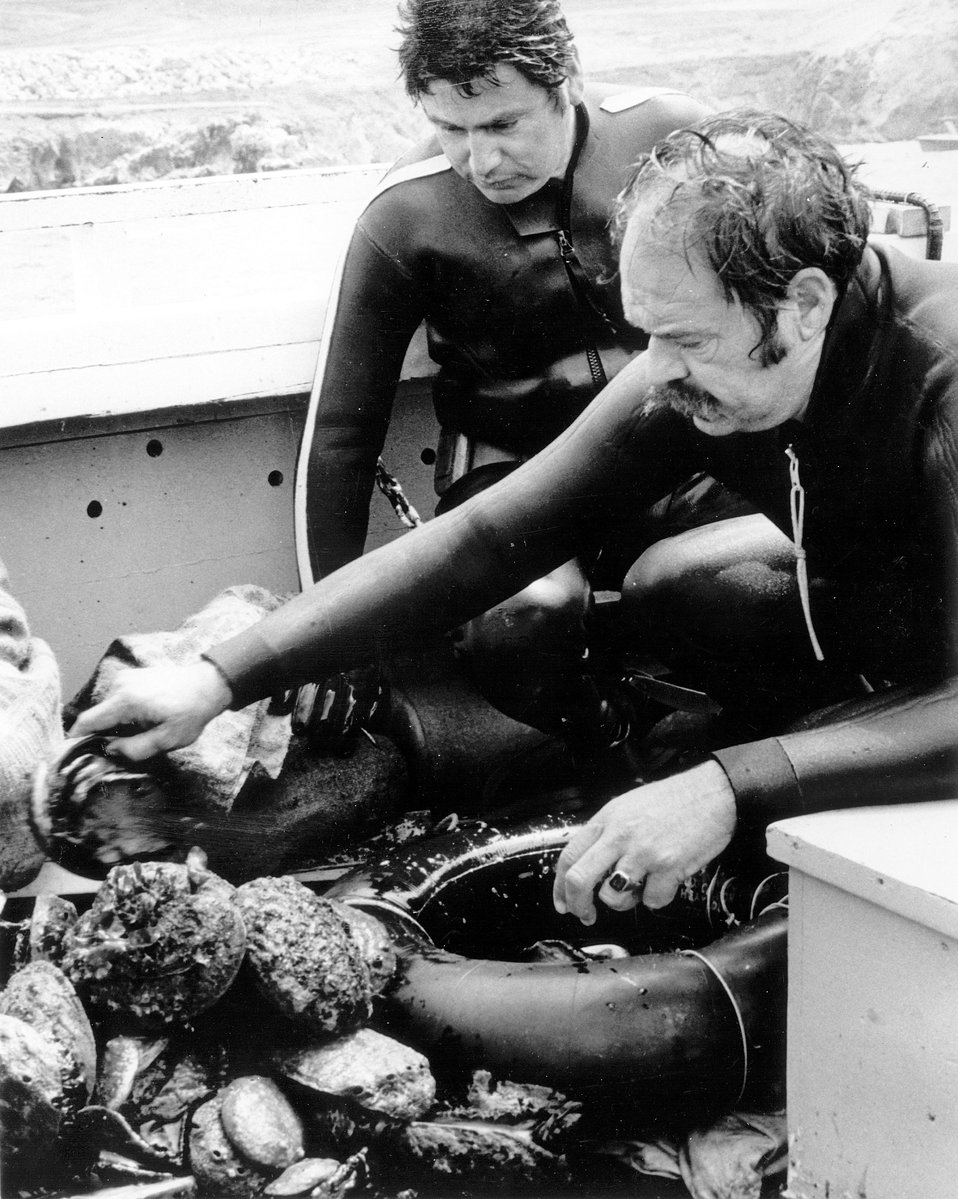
More than 14,000 abalones have been removed from the site of a breakwater for Pacific Gas & Electric Company's (PG&E's) nuclear power plant under construction near Diablo Canyon in San Luis Obispo County, California. Circa 1970.